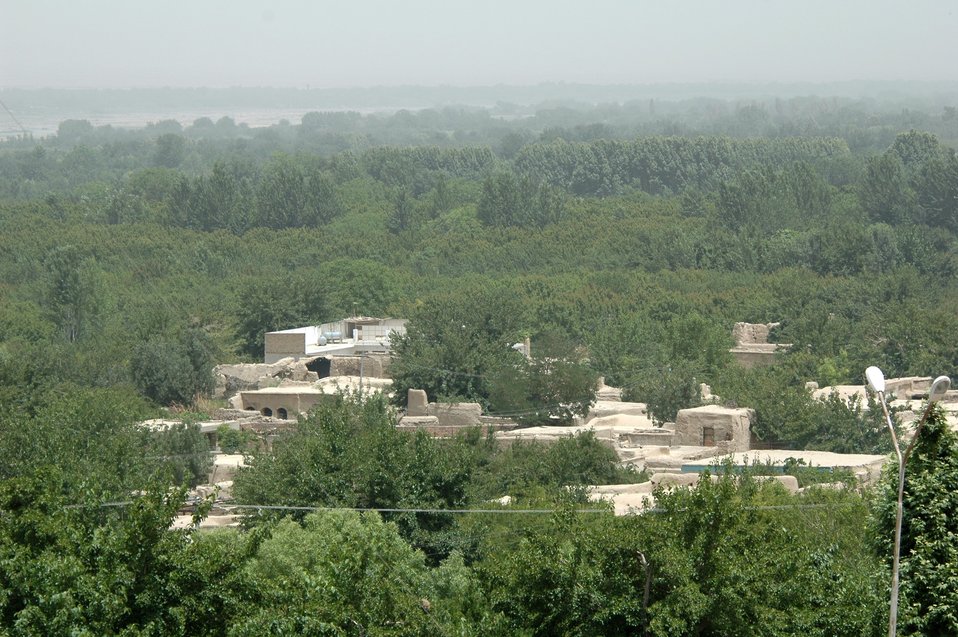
CODEL Berman